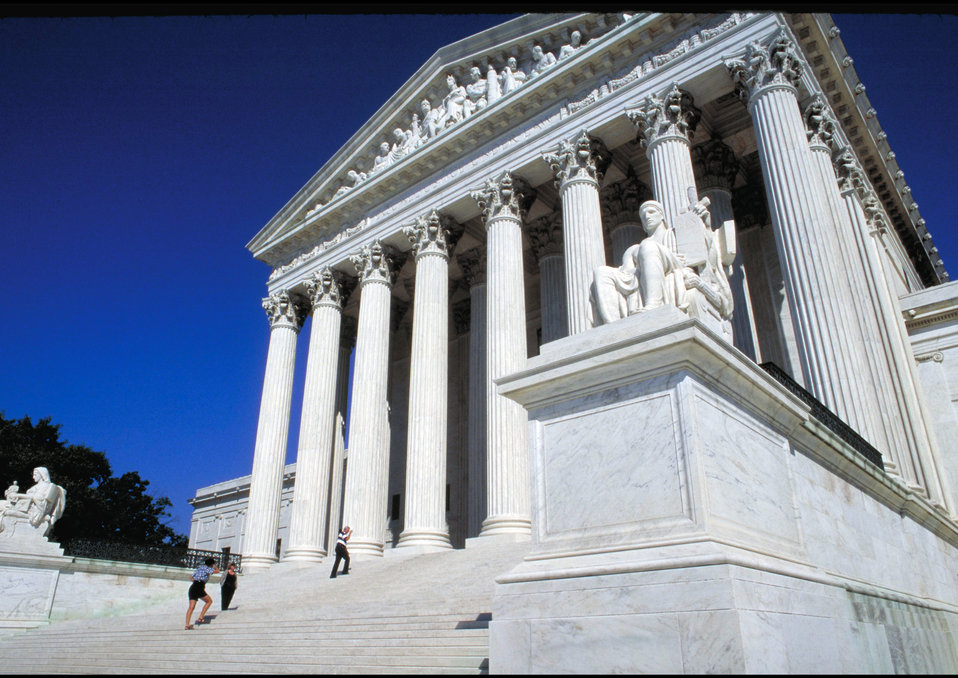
Supreme Court in Washington, DC.